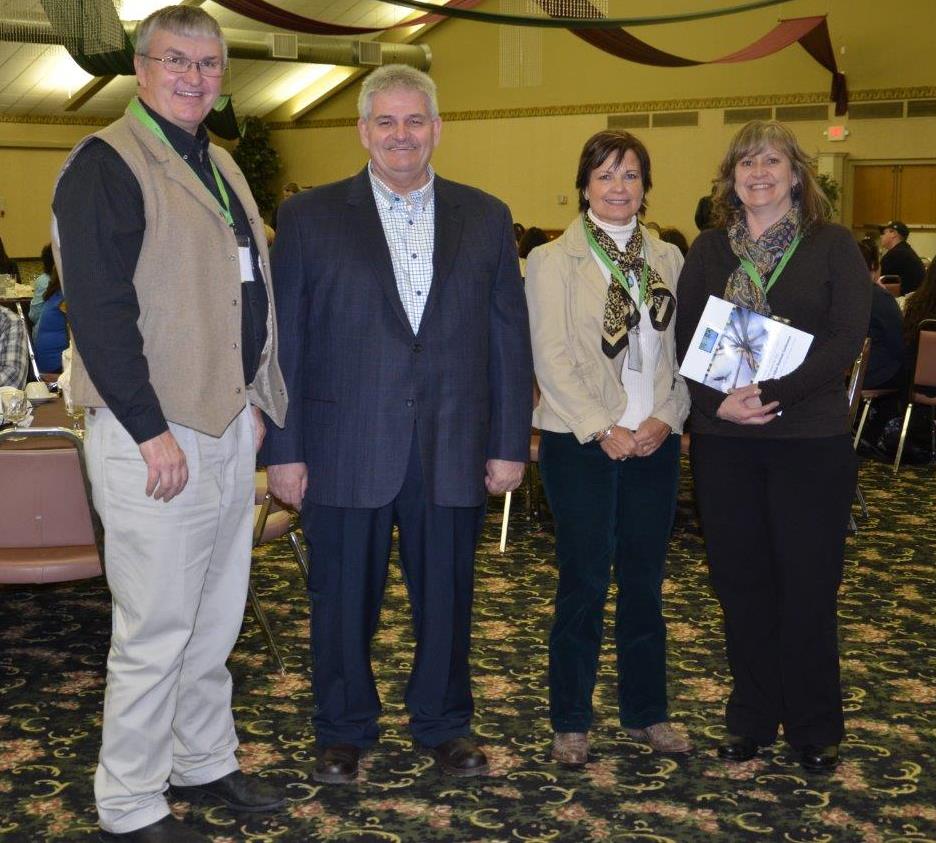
Strike Force Photo1

U.S. Department of Agriculture (USDA) Farm Service Agency (FSA) South Dakota District Director Dan Whetham, USDA Natural Resources Conservation Service (NRCS) South Dakota Assistant State Conservationist Michael A. Combs, USDA Rural Development (RD) South Dakota State Director Elsie Meeks, and South Dakota Indian Business Alliance President and Four Bands, Inc. Executive Director Tanya Fiddler stand together at the bi-annual South Dakota Indian Business Alliance Conference held in Rapid City, SD. South Dakota USDA officials highlighted the StrikeForce initiative at the bi-annual South Dakota Indian Business Alliance Conference held in Rapid City. The conference with the theme of, “Building Opportunities in the New Native America,” was a perfect opportunity to announce South Dakota USDA’s focus on increasing partnerships and leveraging resources on South Dakota tribal lands.